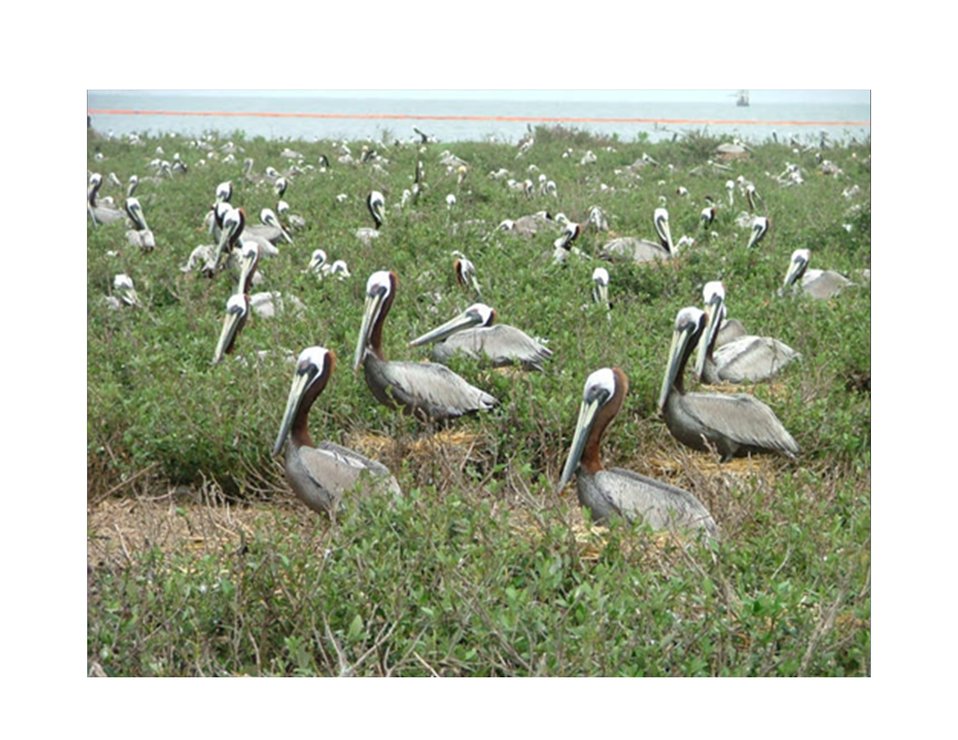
Pelicans at Rest, Louisiana